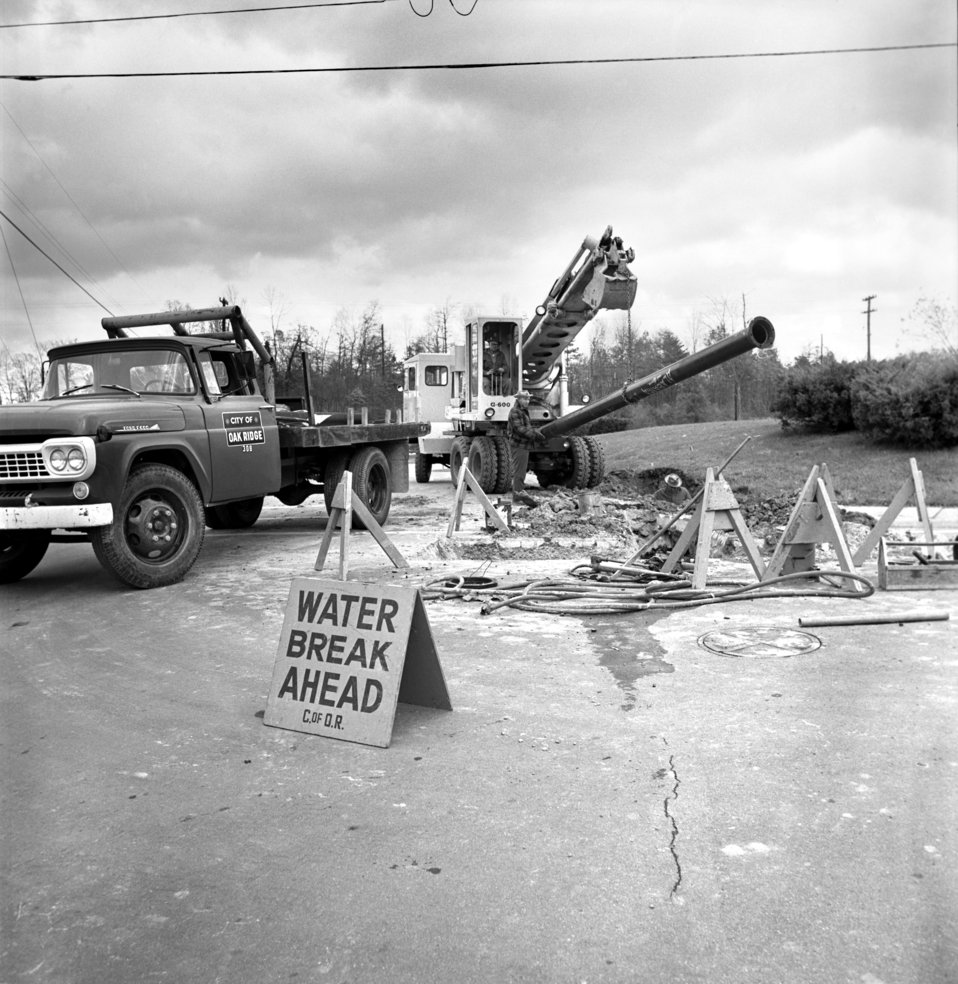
Water Pipe Work Oak Ridge 1968

68-579a DOE photo Frank Hoffman 10-1968 Oak Ridge Tennessee